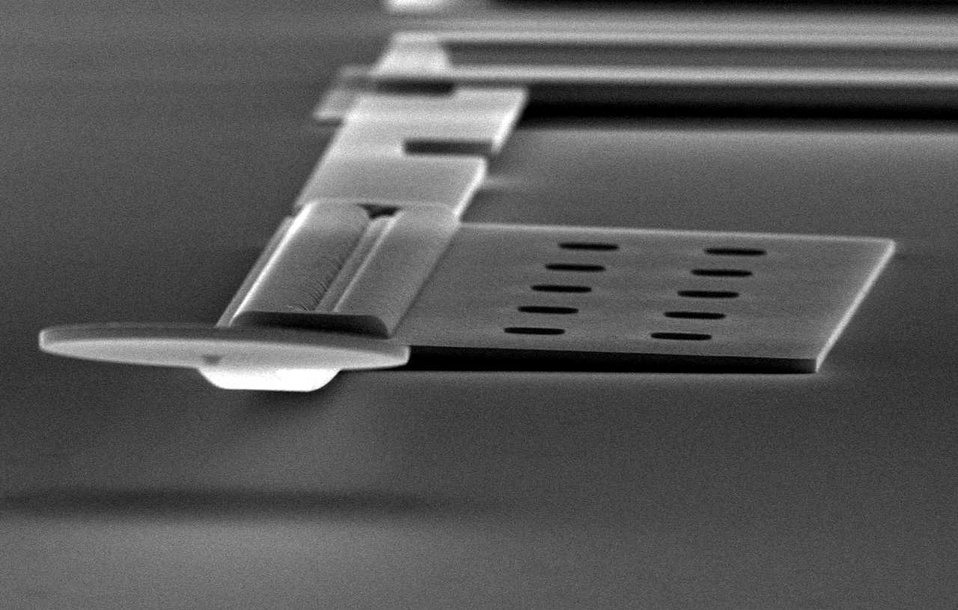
Nanosoccer Robots; RoboCup

Closeup view of the robot built by engineering students at the U.S. Naval Academy for the NIST-coordinated nanosoccer competition at the 2007 RoboCup in Atlanta. The Midshipmen will be fielding their miniature soccer player (about 300 micrometers in length--the size of a dust mite) against four challengers at the upcoming RoboCup in Austria.